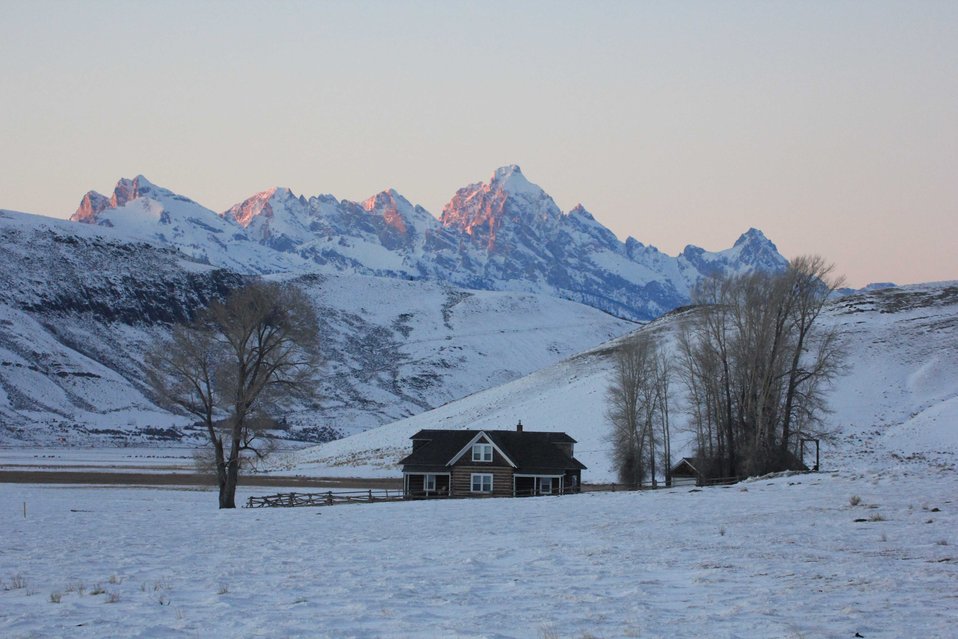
Calling It a Day

Daylight draws to an end as alpine glow lights up the Teton Range behind the historic Miller House.

Credit: USFWS / Ann Hough, National Elk Refuge volunteer